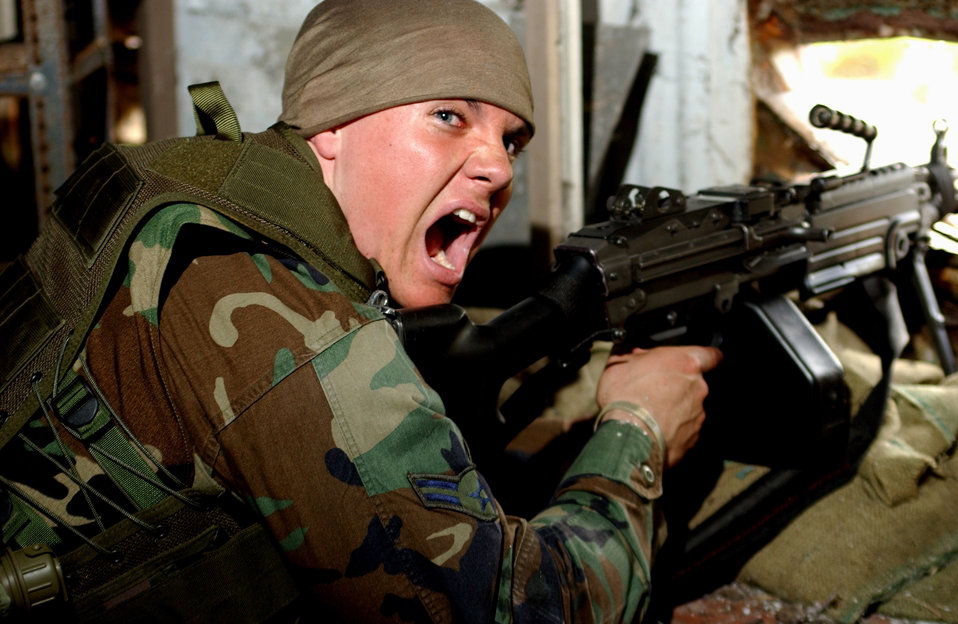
Let's Go

ROYAL AIR FORCE SCULTHORPE, England -- Airman 1st Class Daniel Nolan shouts orders as he shoots his last round during exercise Poachers Arrow here May 25. Airmen an British soldiers participated in three-day joint force exercise. The Airmen are from the 100th Security Forces Squadron at Royal Air Force Mildenhall, England, and the soldiers are from Ballykelly, Northern Ireland.